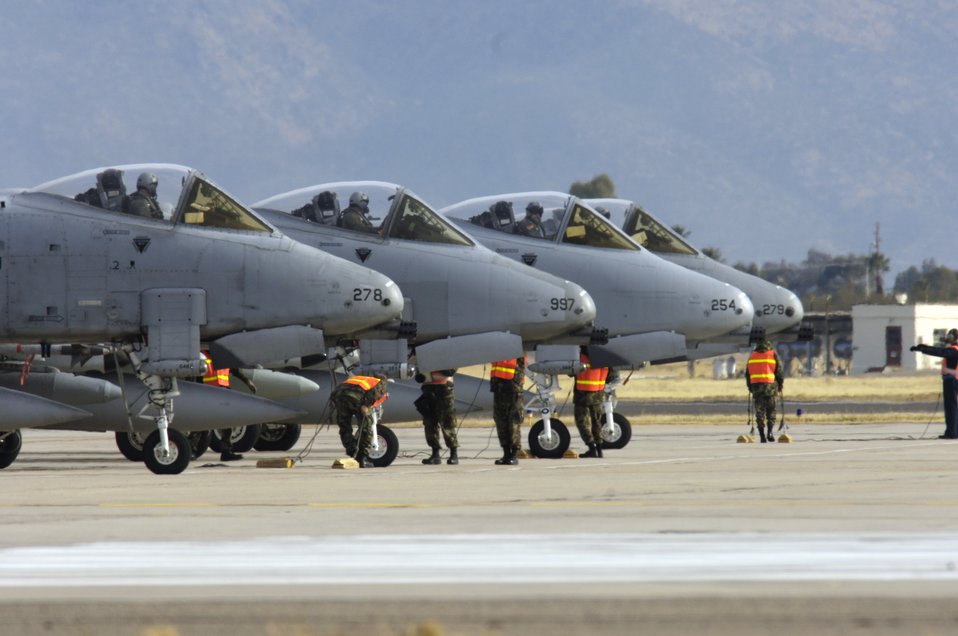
Bushwhacker tests wing

Pilots from the 354th Fighter Squadron prepare to take off in their A-10 Thunderbolt IIs to a simulated deployed location as a part of Bushwhacker 07-02 Jan. 21at Davis-Monthan Air Force Base, Ariz. Bushwacker 07-02 is an operational readiness exercise that tests the 355th Wing's ability to prepare deploy.